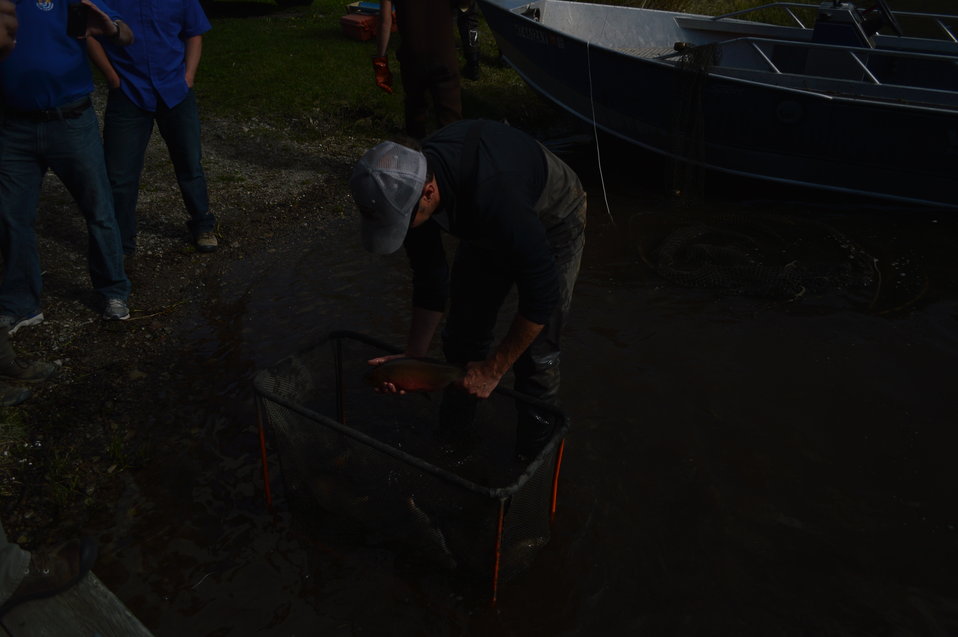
Regional Leadership Visit to Montana 2014